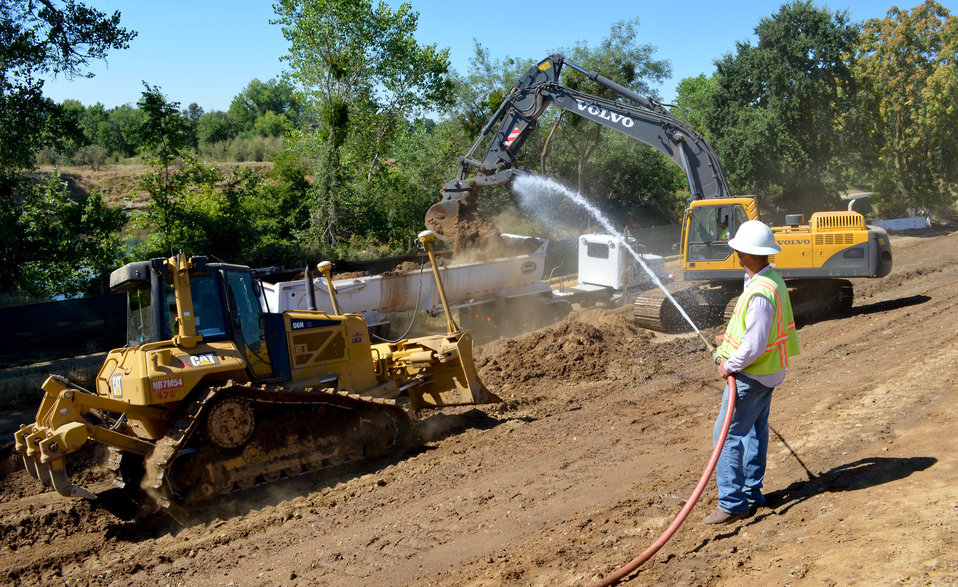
Keeping down dust during Howe Avenue levee raise start

A contractor for the U.S. Army Corps of Engineers Sacramento District keeps down dust Aug. 2, 2012, during the Howe Avenue levee raise project. The early stages of the project involve stripping away the old levee material, and crews must use water to keep dust away from the nearby swimming pools and American River Bike Trail users. After scheduled completion this October, the project will further reduce area flood risk by raising and reinforcing more than 4,000 feet of levee along the American River in Sacramento, Calif.